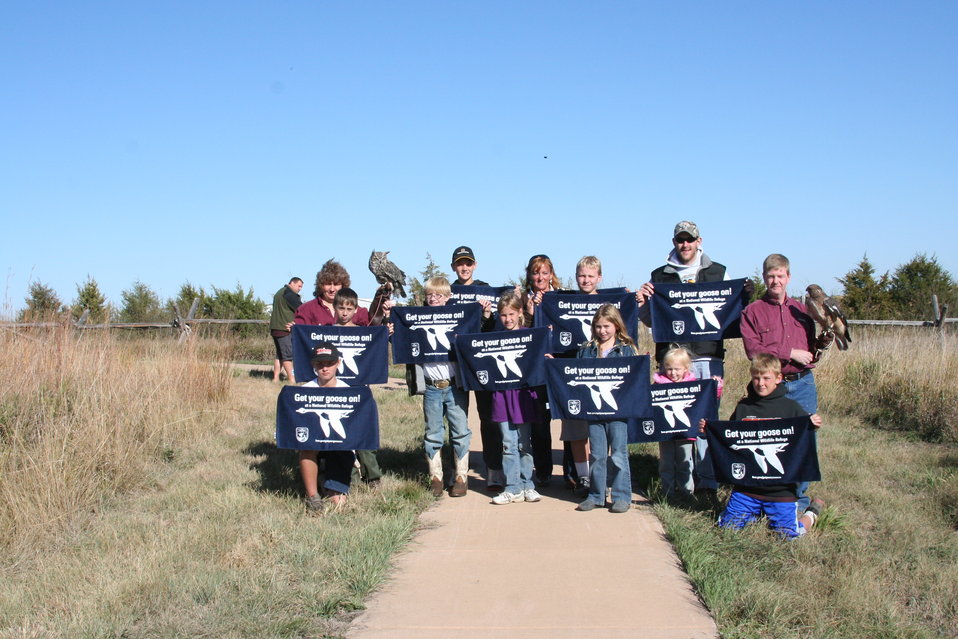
Get Your Goose On! - Raptor Style!

During Huron Wetland Management District's 2012 Prairie Festival, visitors were treated to an up close and personal look at various birds of prey.